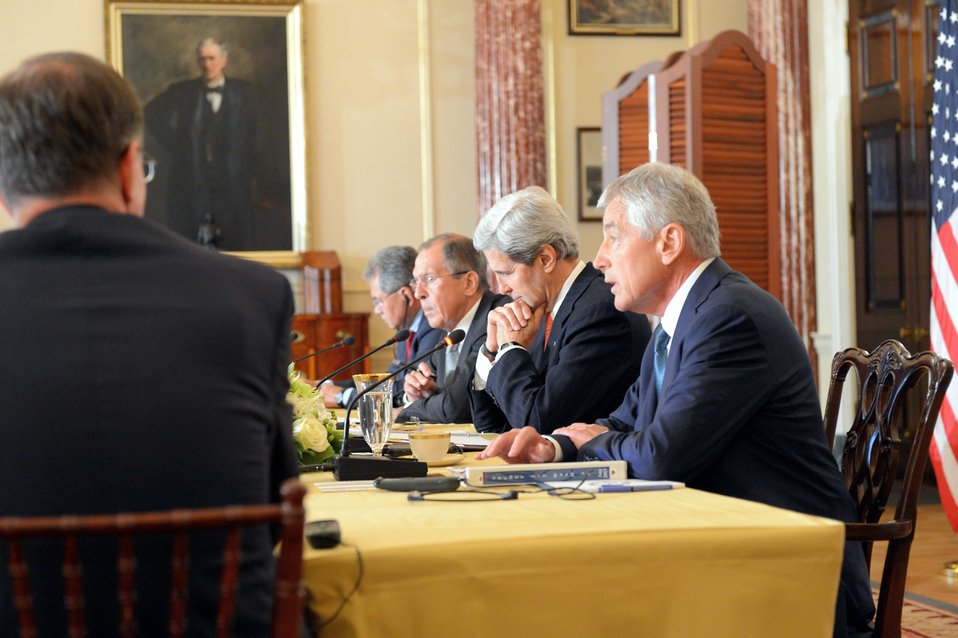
Secretaries Kerry and Hagel Meet With Russian Ministers Lavrov and Shoygu

U.S. Secretary of State John Kerry and U.S. Secretary of Defense Chuck Hagel meet with Russian Foreign Minister Sergey Lavrov and Russian Defense Minister Sergey Shoygu at the U.S. Department of State in Washington, D.C., on August 9, 2013.